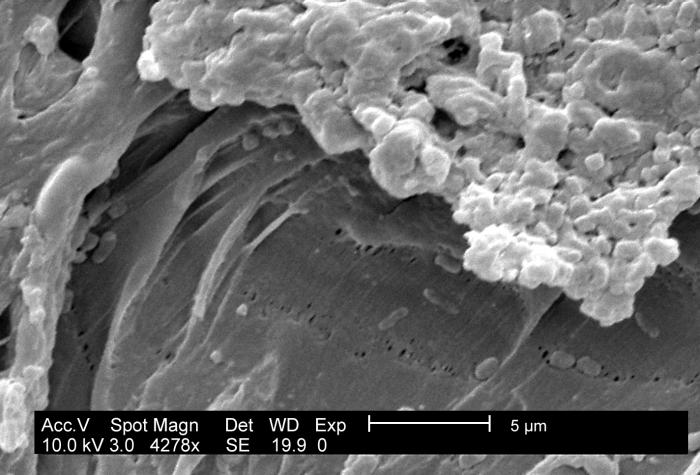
This SEM depicts an E. coli (ATCC 11775) biofilm grown on PC (polycarbonate) coupons using a CDC biofilm reactor.